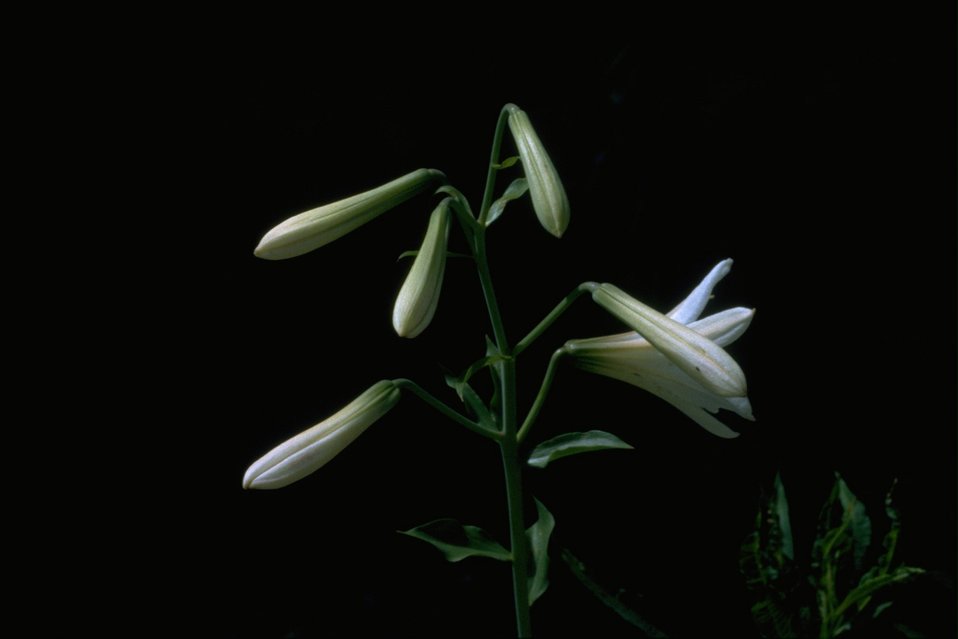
Medium shot of Lilium washingtonianum.